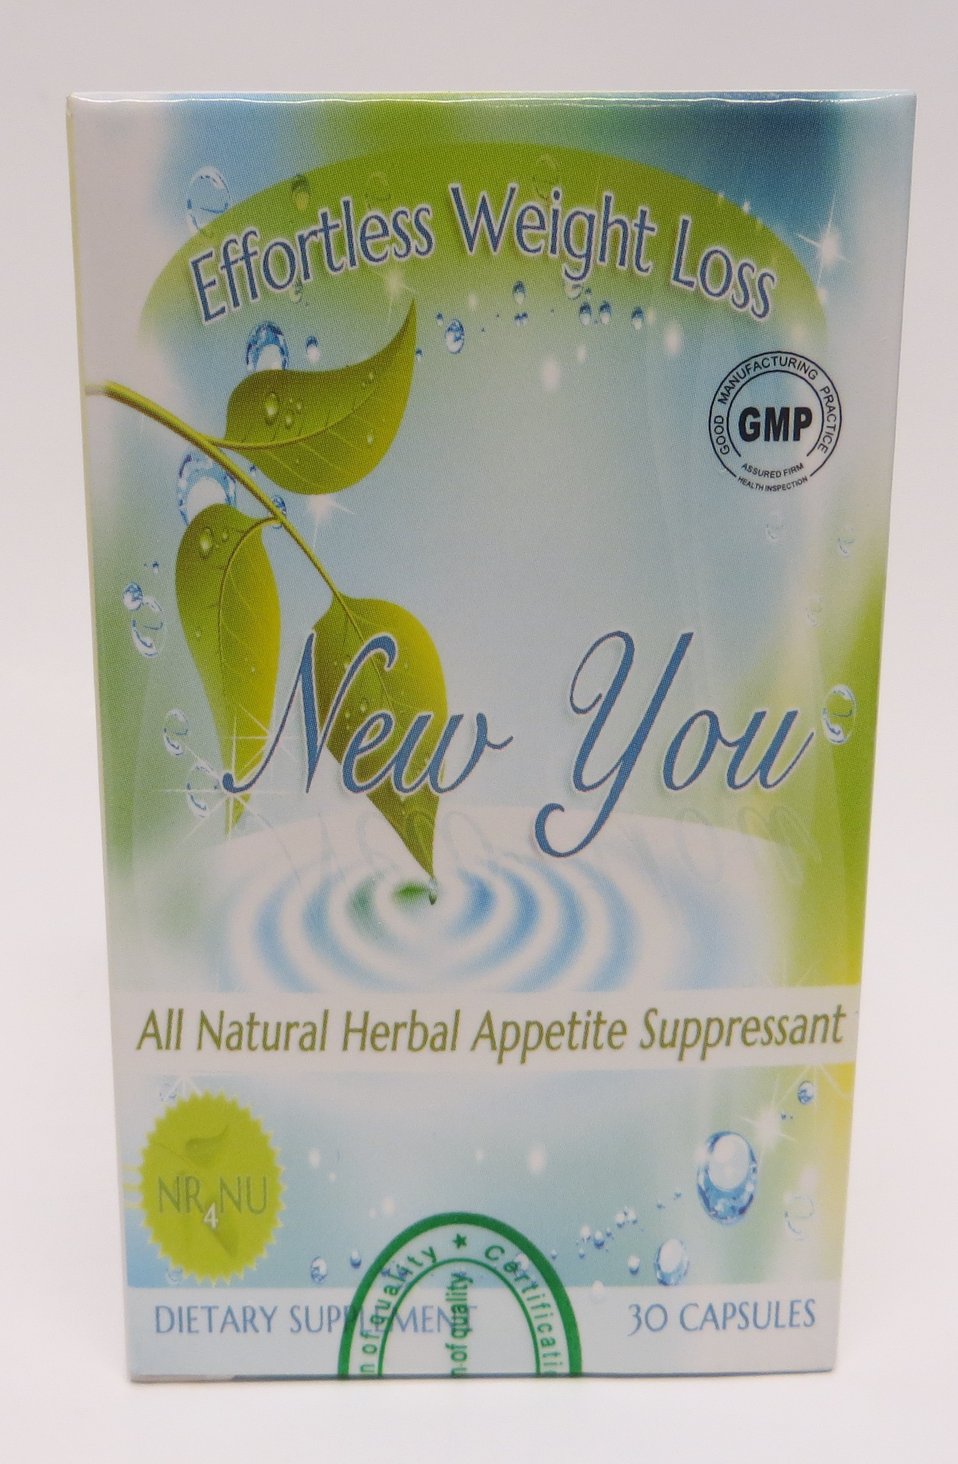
New You

April 2, 2014 - The FDA is advising consumers not to purchase or use New You, a product promoted and sold for weight loss. The product was found to contain undeclared sibutramine and phenolphthalein. For more information, go to www.fda.gov/Drugs/ResourcesForYou/Consumers/BuyingUsingMe...

And read this Consumer Update: Beware of Fraudulent ‘Dietary Supplements’